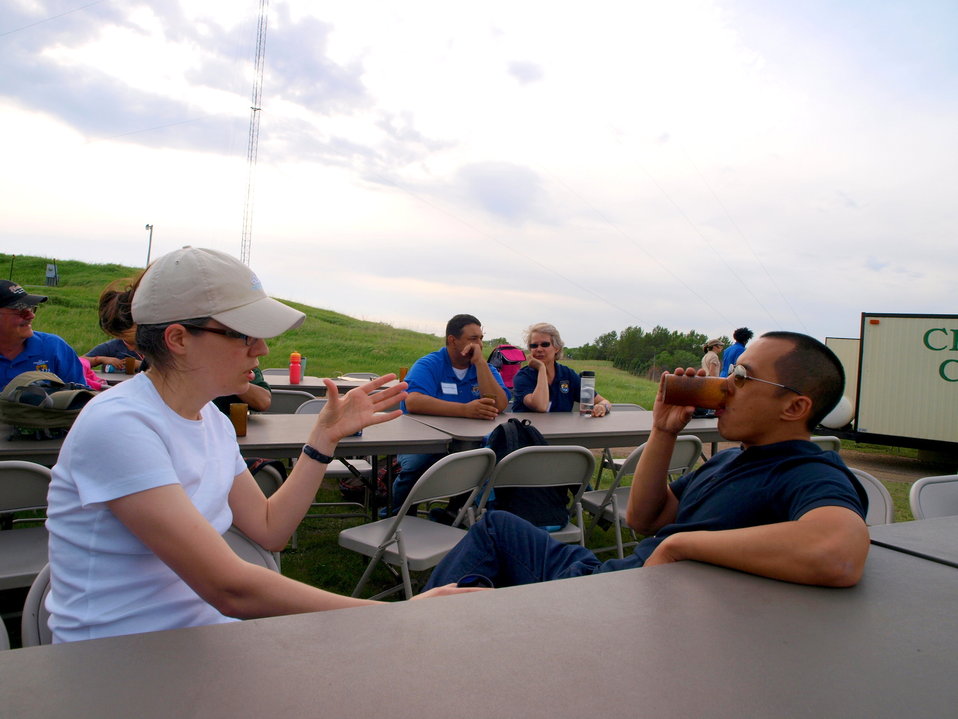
CDIP 2012 Fergus Falls

Characteristic Emily and Justin